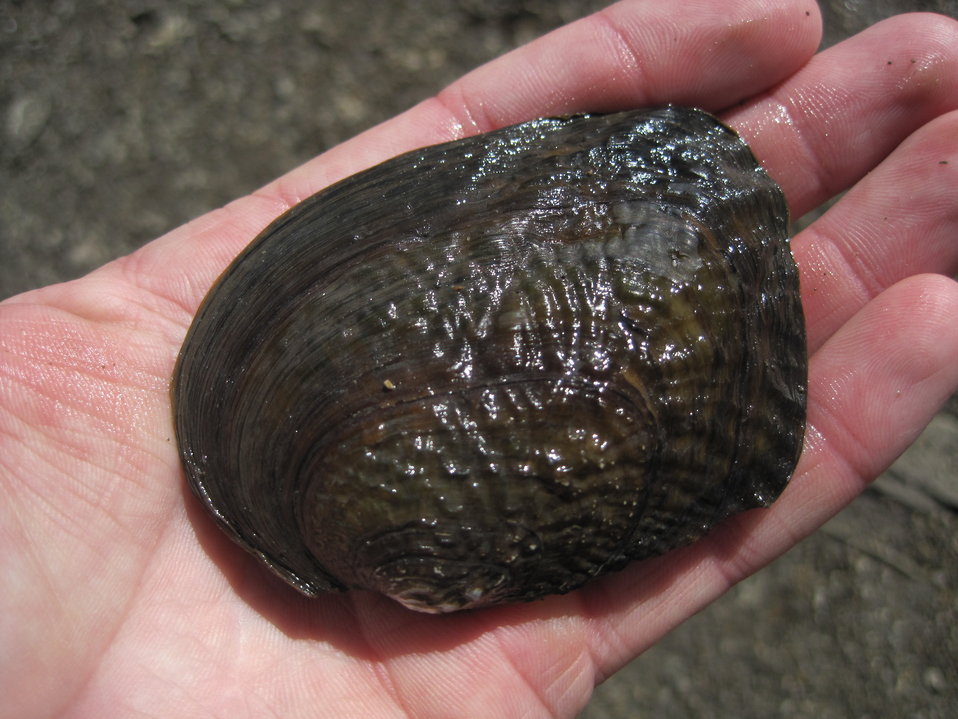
Pistolgrip Mussel

With the general shape of a pistolgrip, the Pistolgrip mussel (Tritogonia verrucosa) can be easily identified. This Pistol grip was found in the Marais des Cygnes River in Kansas.